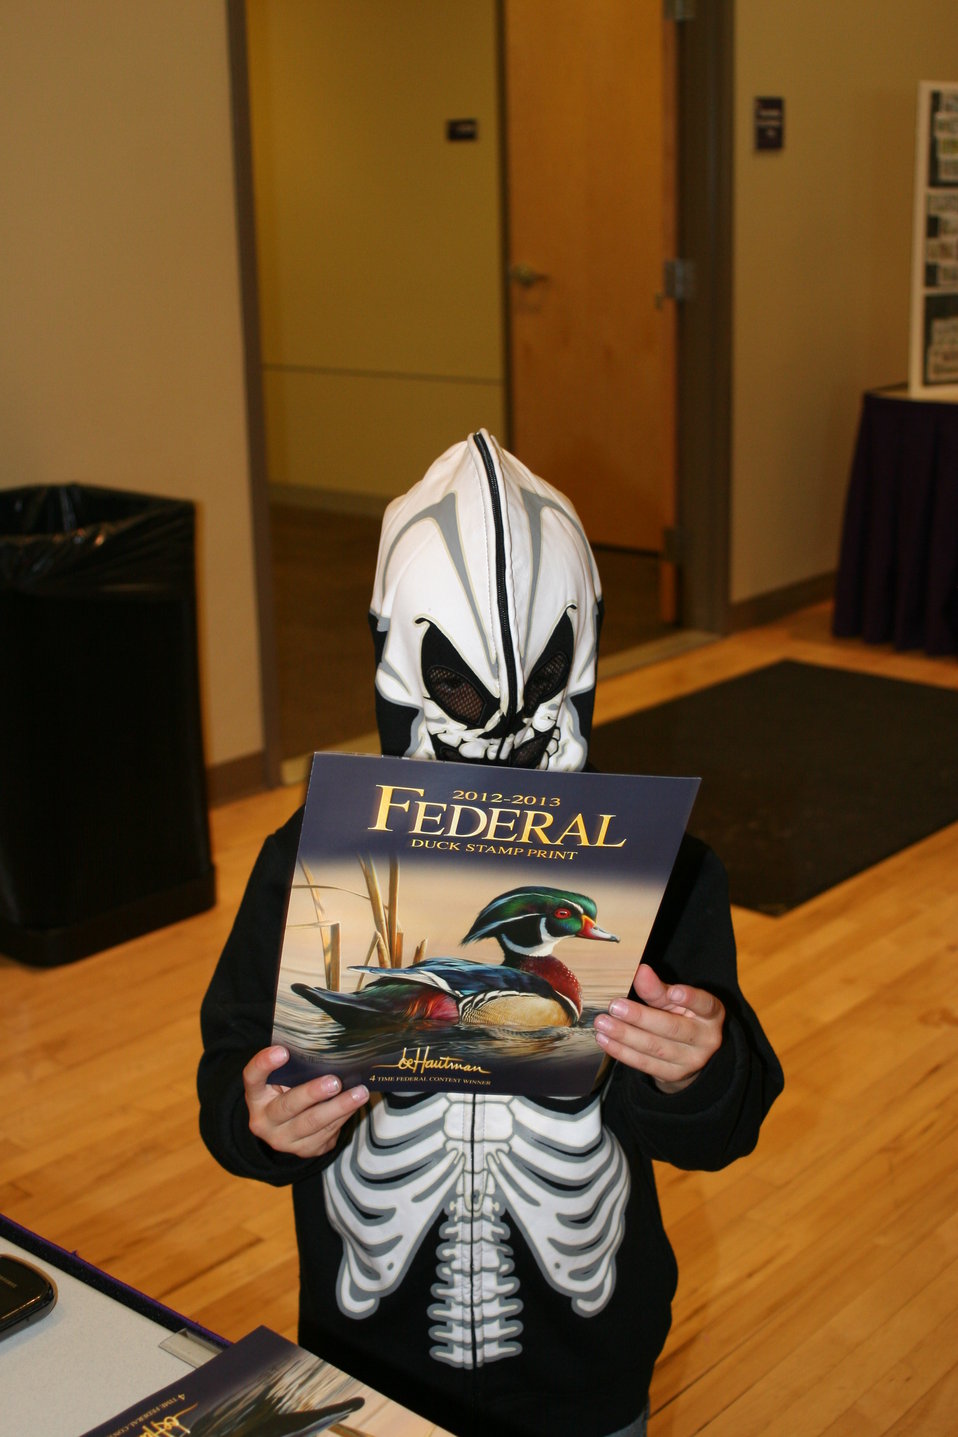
Even Skeletons Love Duck Stamps

Photo Credit: Suzanne Fellows / USFWS
The U.S. Fish & Wildlife Service sponsored the 2012 Federal Duck Stamp Art Contest September 28 and 29 in Ogden, Utah, at Weber State University. A panel of five judges was responsible for choosing the art work used to design the 2013-2014 Migratory Bird Hunting and Conservation Stamp.